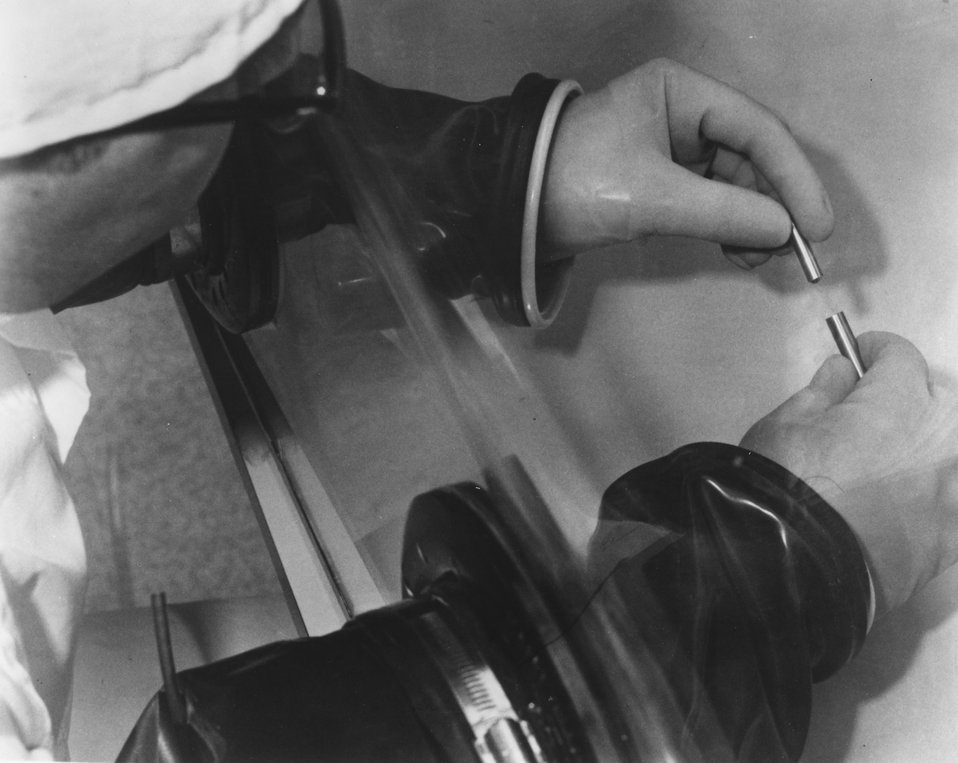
Nuclear energy is being used to power an experimental cardiac pacer that is designed to relieve heart block sufferers on an extended basis. Circa 1970.